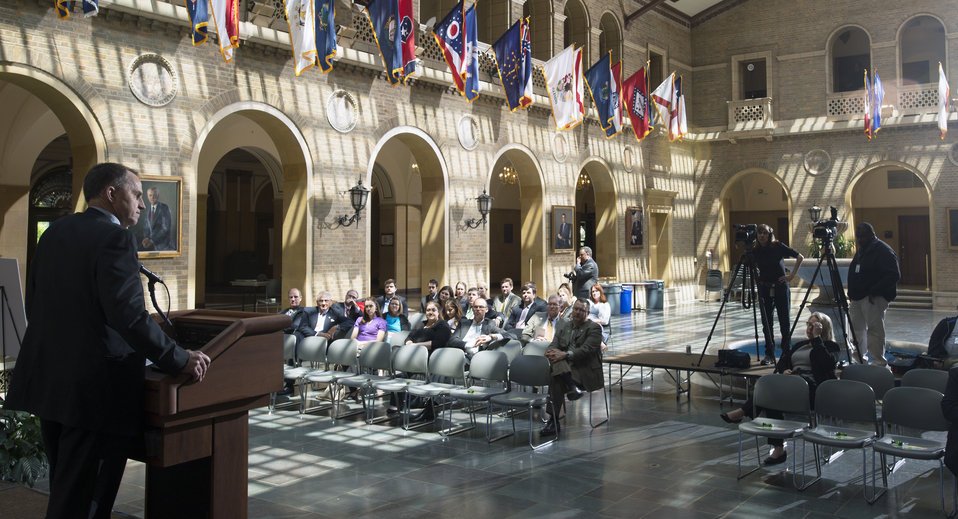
President of Ducks Unlimited George Dunklin speaks at the Ducks Unlimited/USA Rice Federation event at the U.S. Department of Agriculture (USDA) in Washington, D.C. on Tuesday, May 6, 2014.